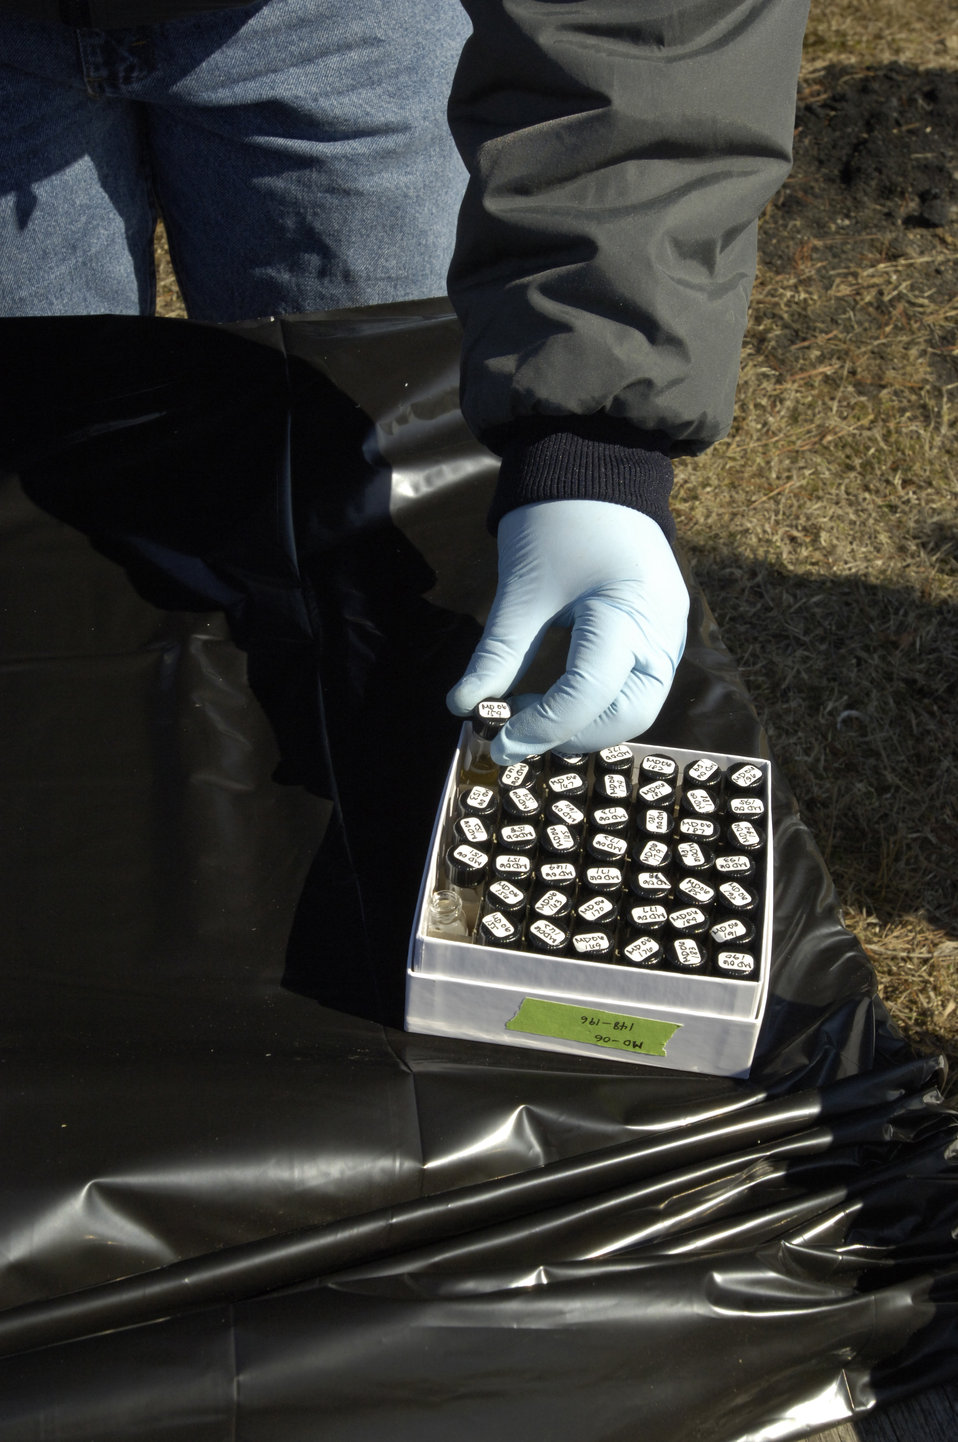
U. S. Department of Agriculture (USDA) Animal and Plant Health Inspection Service (APHIS) personnel humanely capture wild birds in Annapolis, Maryland on February 21, 2006 and test them for the Avian Influenza (AI) virus.